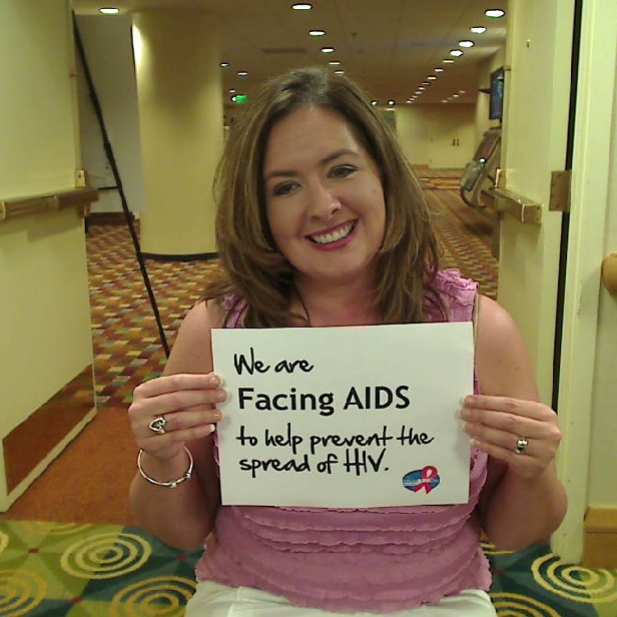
We are Facing AIDS to help prevent the spread of HIV.